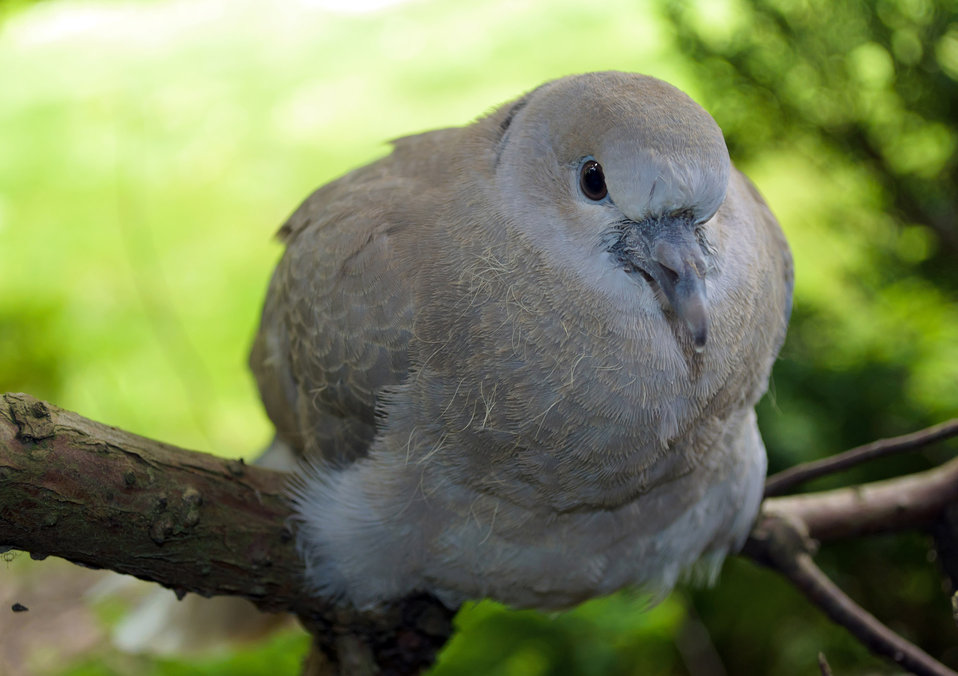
Pigeon

Sitting pigeon.